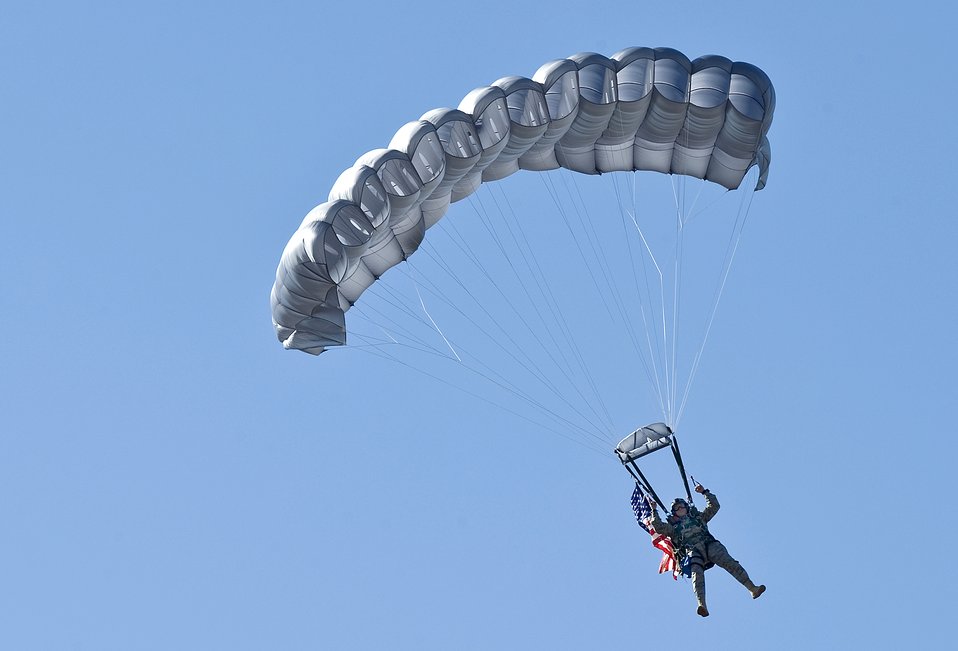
Air Mobility Rodeo begins at McChord

Master Sgt. Jeff Guilmain delivers the American flag with style after parachuting from a C-5 Galaxy during the opening ceremony of the Air Mobility Rodeo 2009 July 19 at McChord Air Force Base, Wash. Sergeant Guilmain is stationed with the 22nd Special Tactics Squadron at McChord AFB.